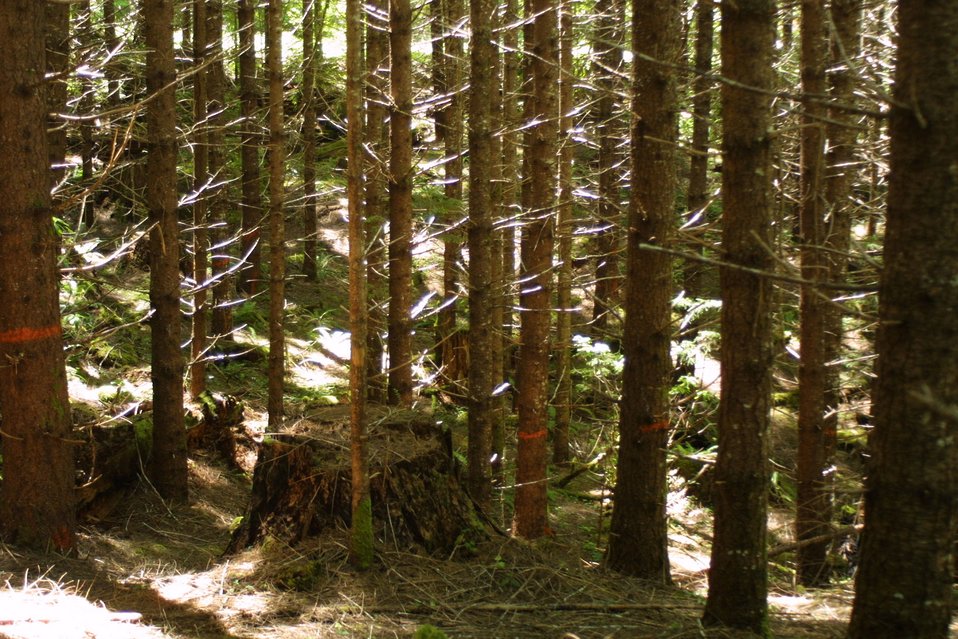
Camas East Timber Sale in Late Successional Reserve.